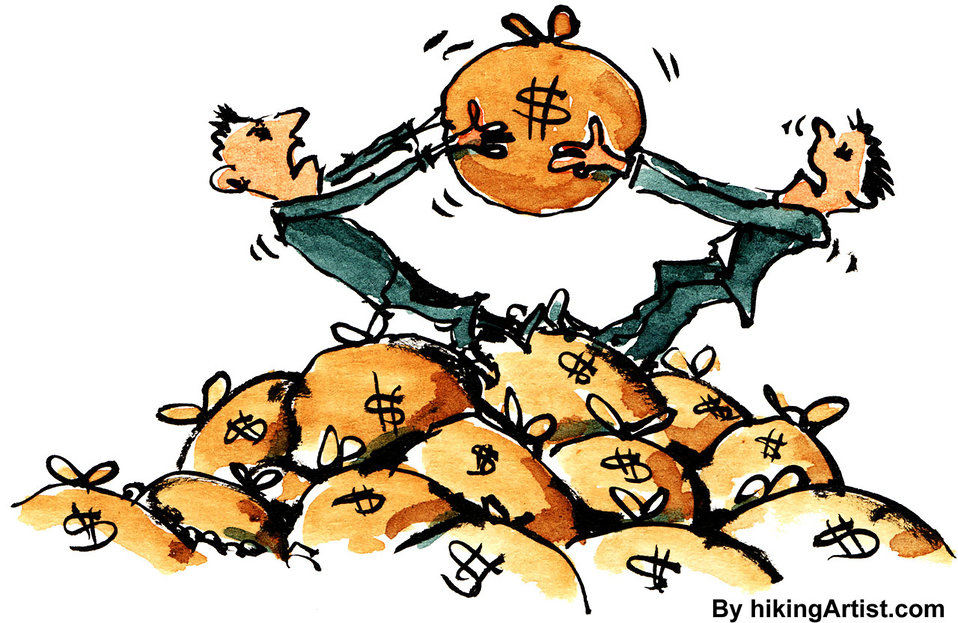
Money fight

Two guys fighting over money.